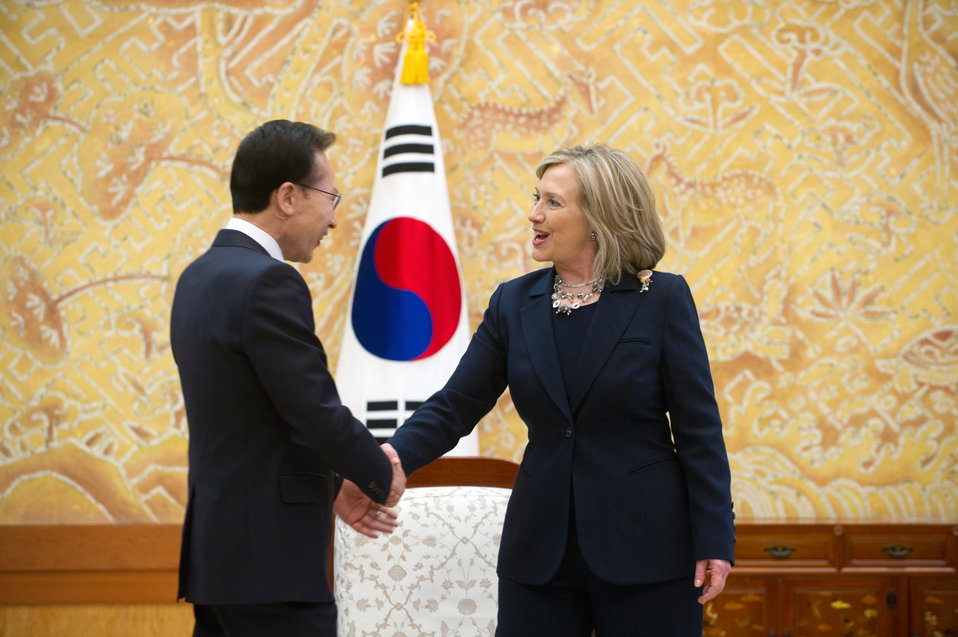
Secretary Clinton Is Greeted By Republic of Korea President Lee Myung-bak

U.S. Secretary of State Hillary Rodham Clinton is greeted by Republic of Korea President Lee Myung-bak at a meeting in Seoul, South Korea, on April 17, 2011.